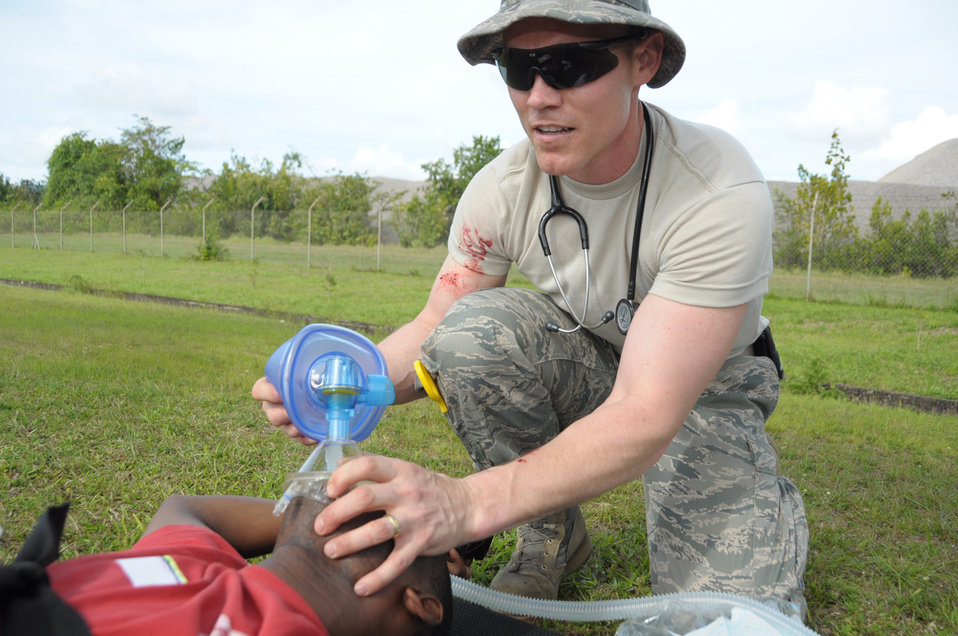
Airmen participate in humanitarian exercise in Trinidad and Tobago

Lt. Col. Jerry Cline gives oxygen to a mock patient in Cumuto Barracks April 8, 2011, at Trinidad and Tobago. Colonel Cline is a part of the Expeditionary Medical Support Health Response Team participating in the Allied Forces Humanitarian Exercise/Fuerzas Aliadas here. Colonel Cline is a physician from the 60th Medical Group Family Medicine.